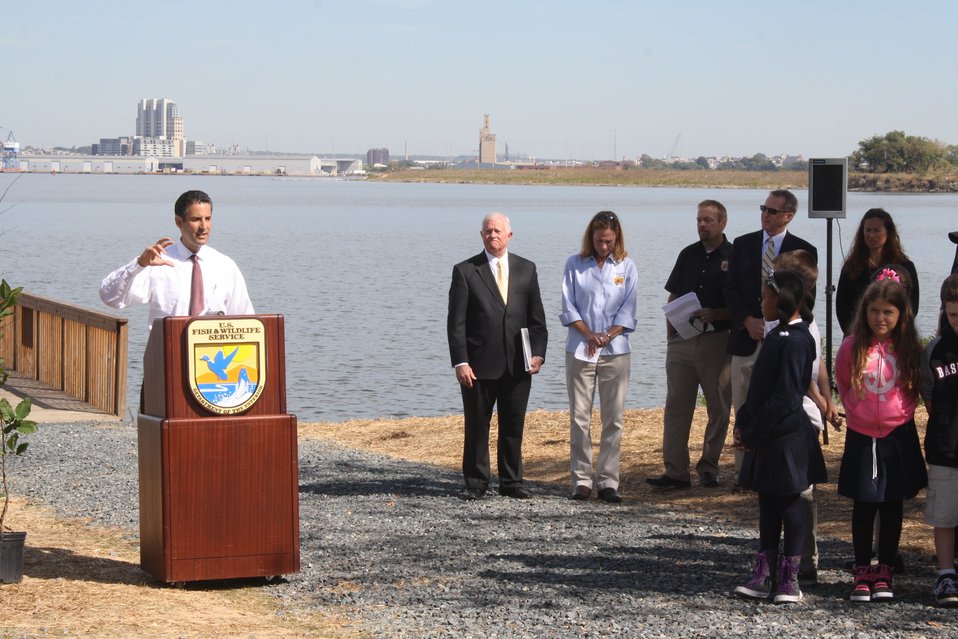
Congressman John Sarbanes speaks at the Masonville Cove designation ceremony. Ther partnership at the site was designated as the nations's first urban wildlife refuge partnership on September 26, 2013.